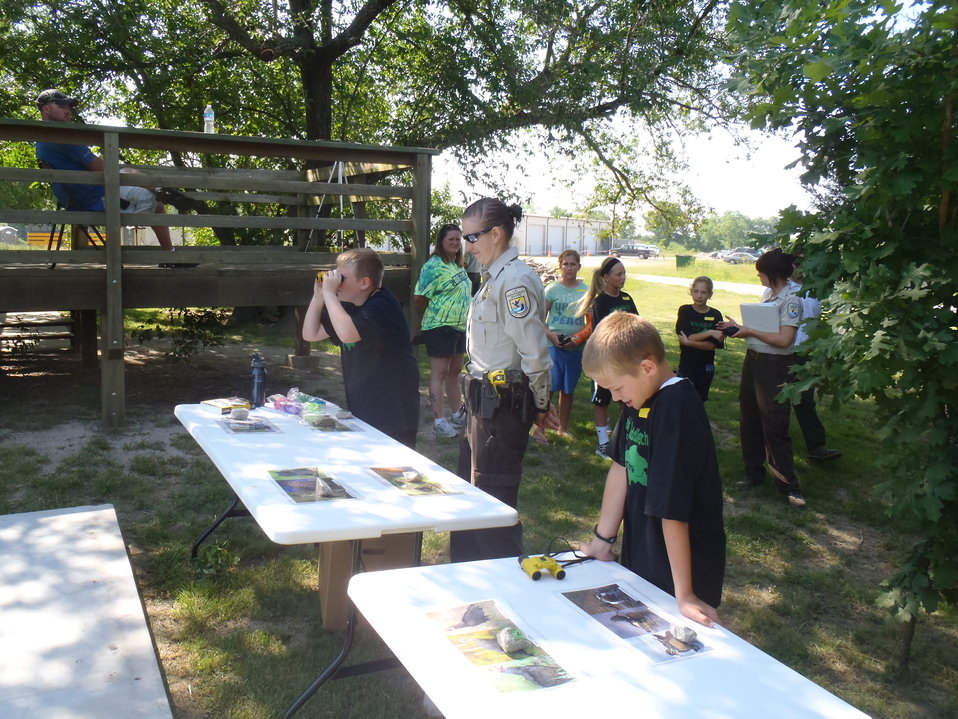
International Migratory Bird Day 2012

Marais des Cygnes National Wildife Refuge